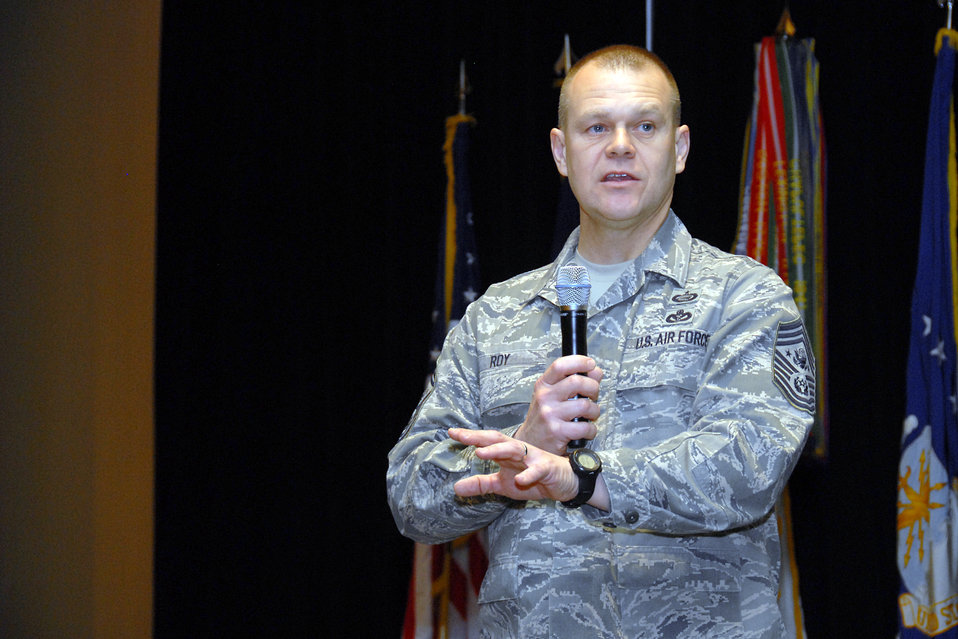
CMSAF speaks to Guardsmen in home state

Chief Master Sgt. of the Air Force James A. Roy addresses about 360 attendees at the third joint Michigan National Guard Senior Noncommissioned Officer Conference Feb. 6, 2010, in Grand Rapids, Mich. Chief Roy is a native of Monroe, Mich.